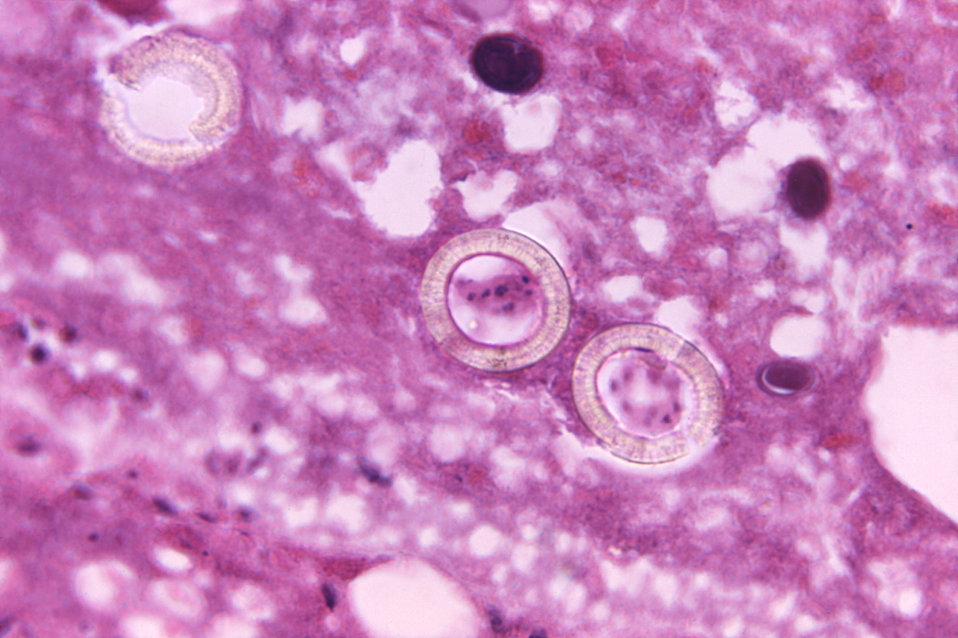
Histopathology of Taenia saginata in appendix. Parasite.